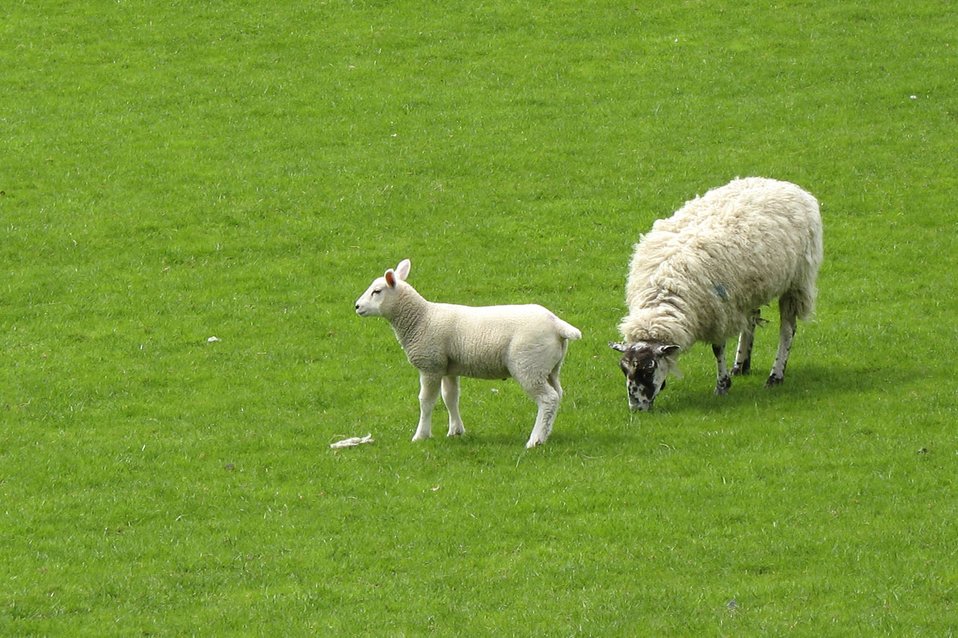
Sheep and her baby

A picture of a baby sheep with her mother.